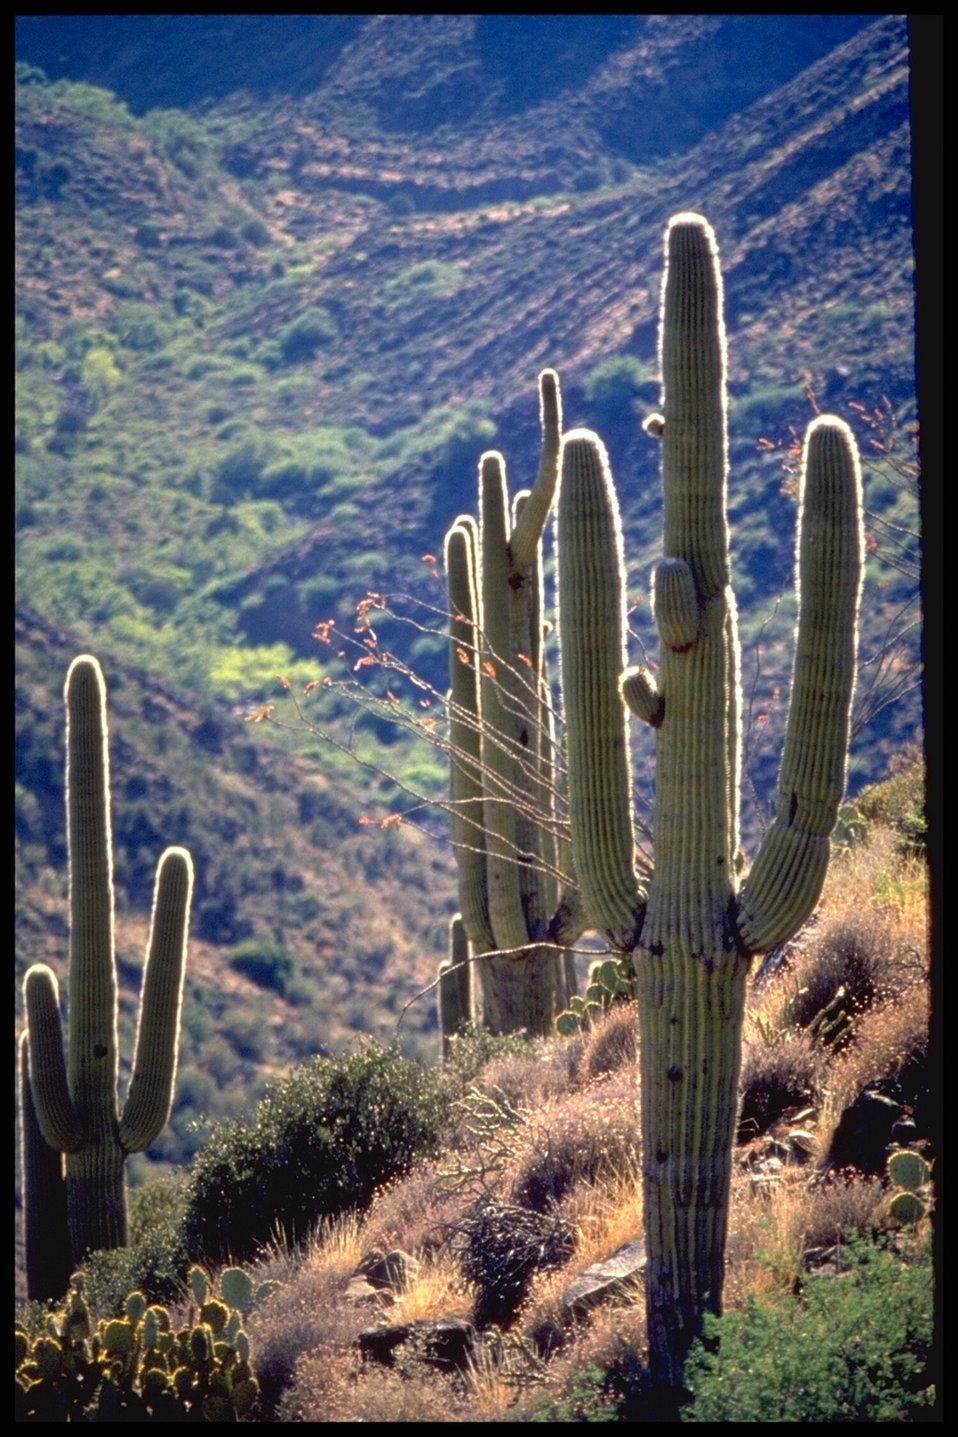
Tall Saguaro Cacti grow in a canyon in the Agua Fria National Monument.